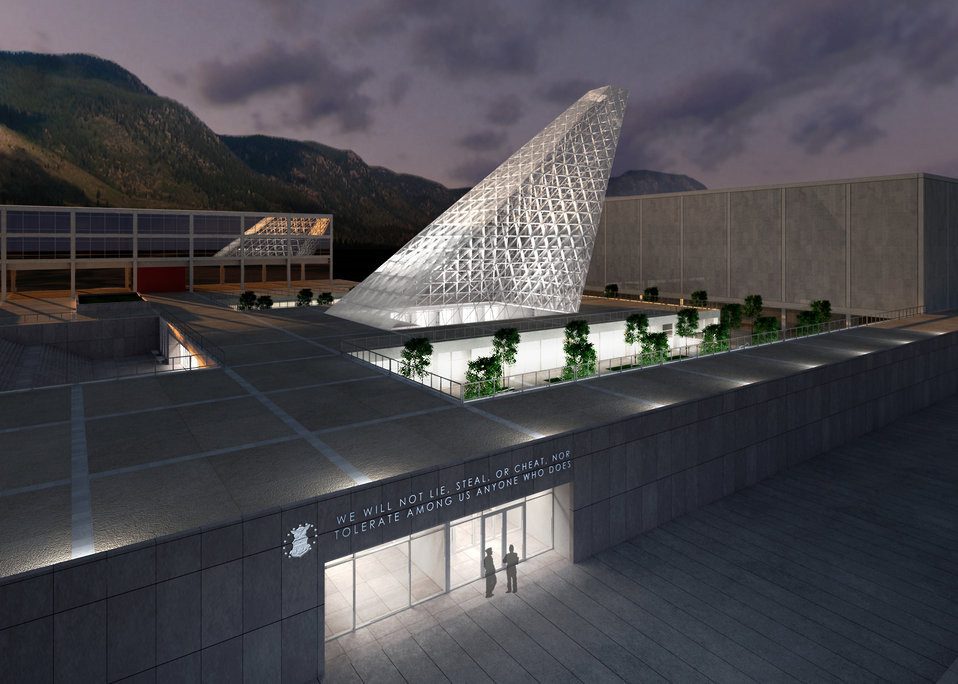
Center for Character and Leadership Development (Artist's Rendering)

The new Center for Character Leadership and Development is shown adjacent to Arnold Hall and Harmon Hall at the U.S. Air Force Academy in this artist's rendering. Construction on the new facility, designed by Skidmore, Owings and Merrill, is scheduled to begin in March 2011 and be complete in March 2012.